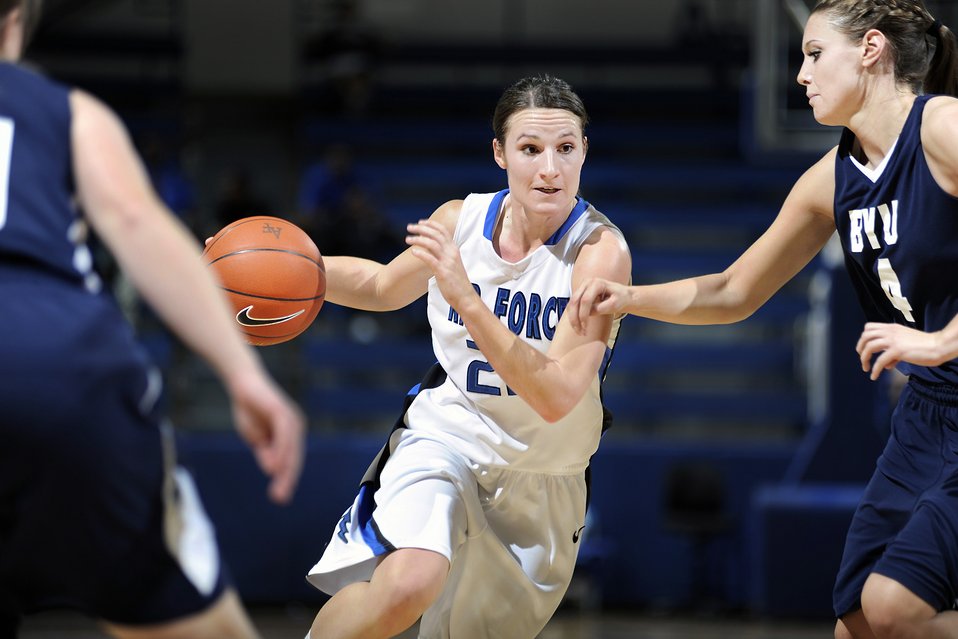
Charging toward the goal

Falcons team captain and senior guard Raimee Beck breaks away from Brigham Young University's Kim Parker Jan. 8, 2011, at the Air Force Academy's Clune Arena in Colorado Springs, Colo. Beck went on to score 13 points even though the Cougars defeated the Falcons 88-60.